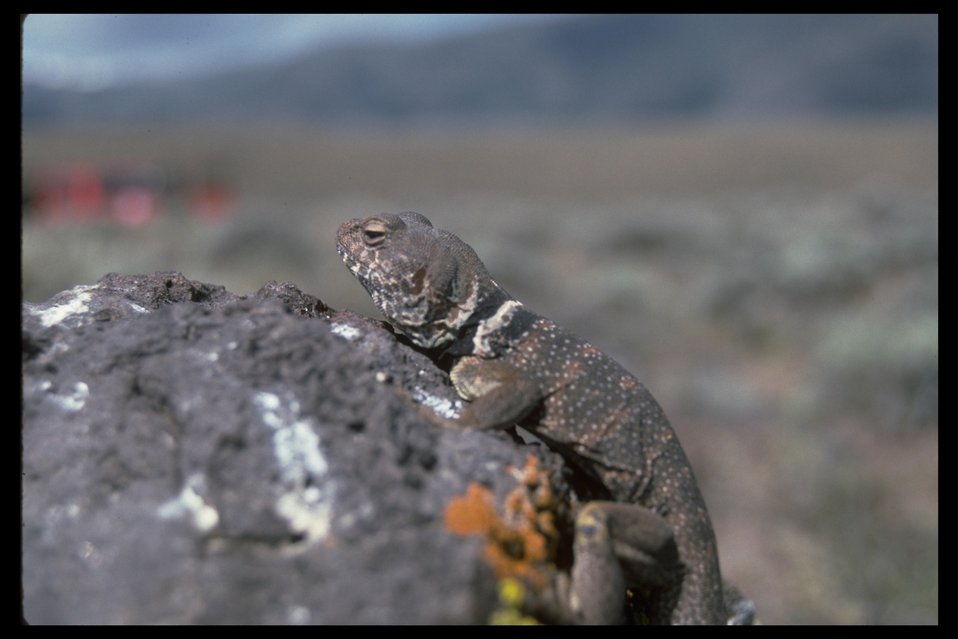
Collard Lizard sitting on lichen covered rock at West Peak WSA. (WSA 2-72J)